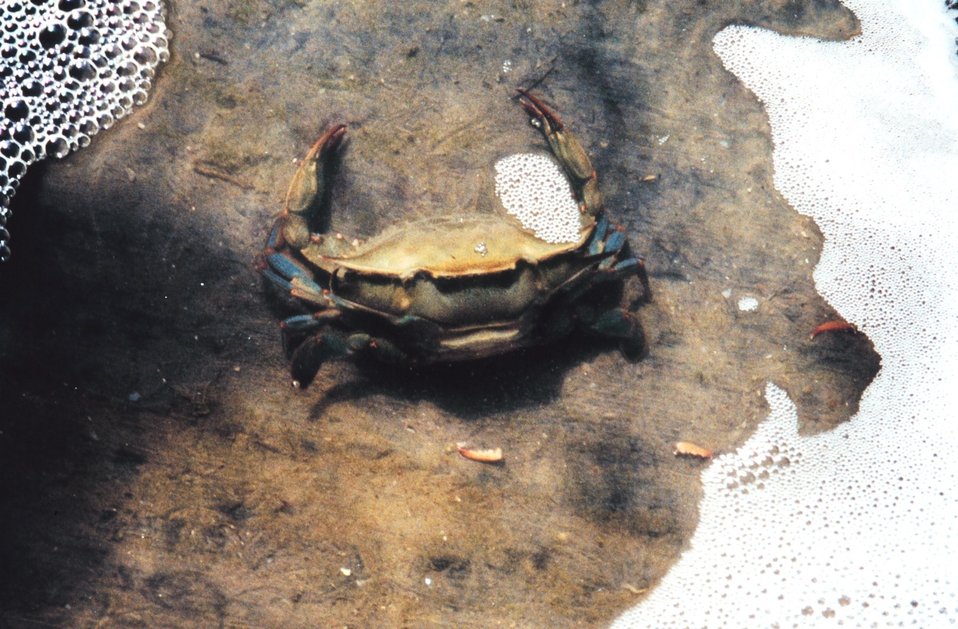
Photo #2 of 8. Having reached the 'buster' molt stage, a Maryland blue crab , Callinectes sapidus, sheds its shell. During its lifetime a crab may molt 20 to 25 times, increasing its size as much as 1/4 to 1/3 each time. The genus and species mean tasty beautiful swimmer.